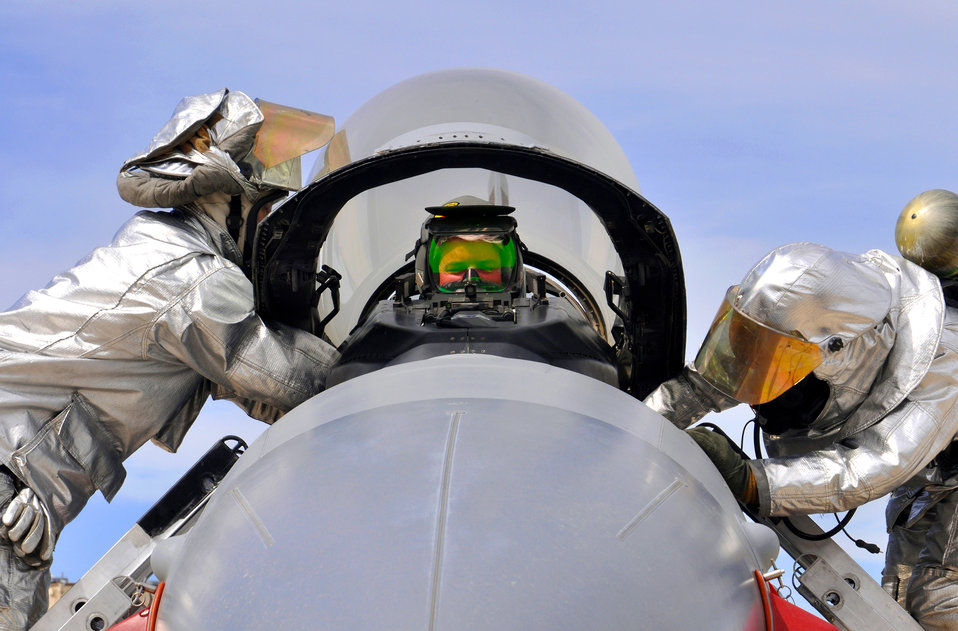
Don't worry, you're safe

Firefighters Staff Sgt. Jeffery Griffen and Staff Sgt. Chad Carrier try to access the